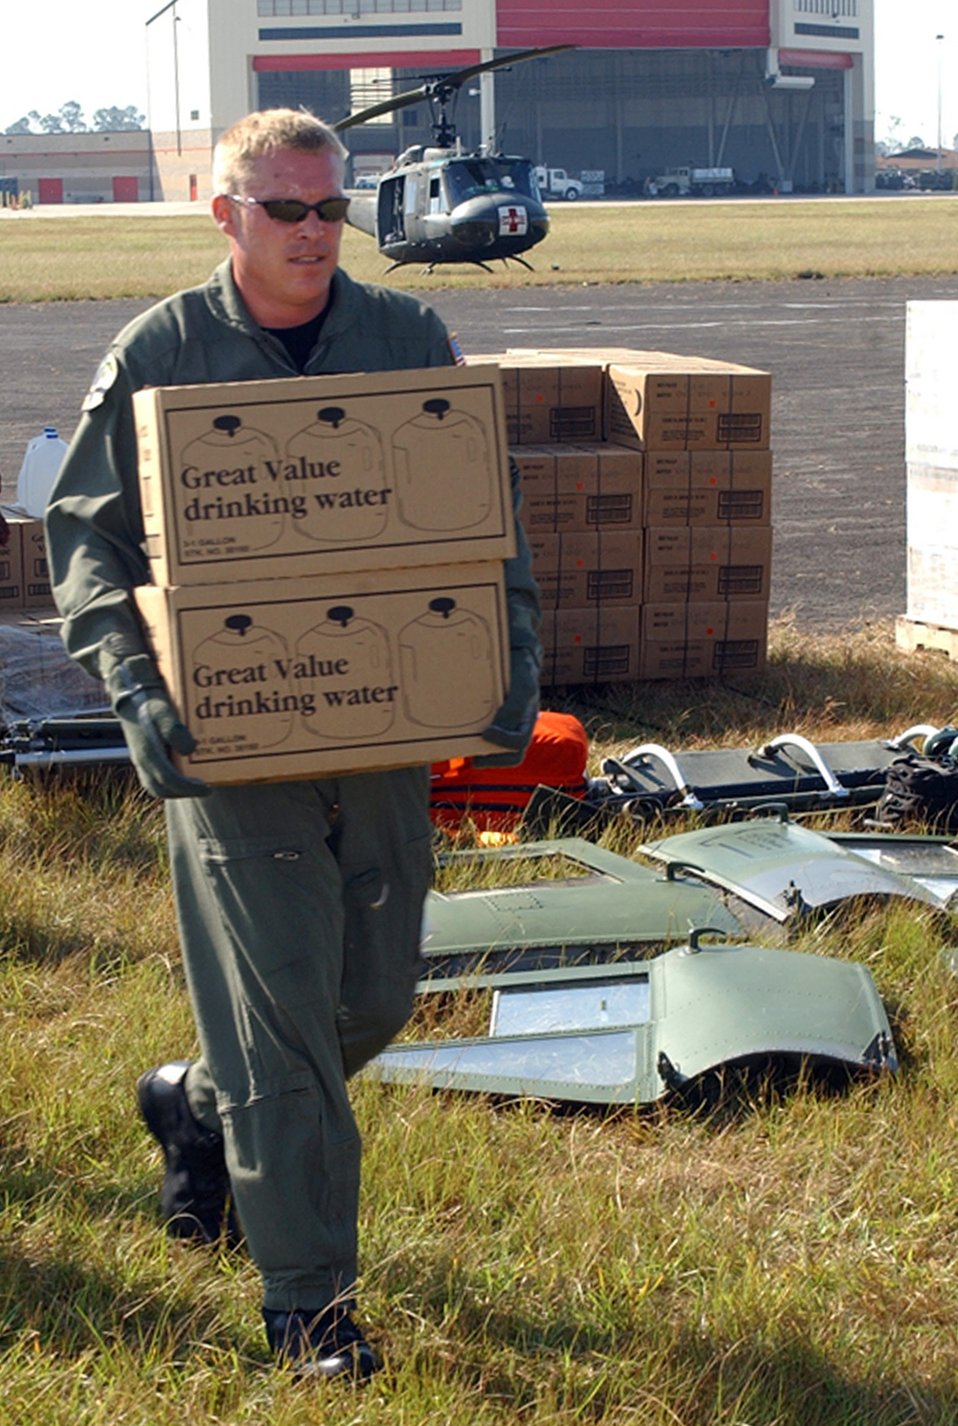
Delivering hope

COLUMBUS AIR FORCE BASE, Miss. - Tech. Sgt. Chad Hagan loads supplies onto a waiting helicopter here. Squadron members have been delivering food and water daily to those who have been affected by Hurricane Katrina. Sergeant Hagan is a 620th Air Expeditionary Squadron flight engineer.